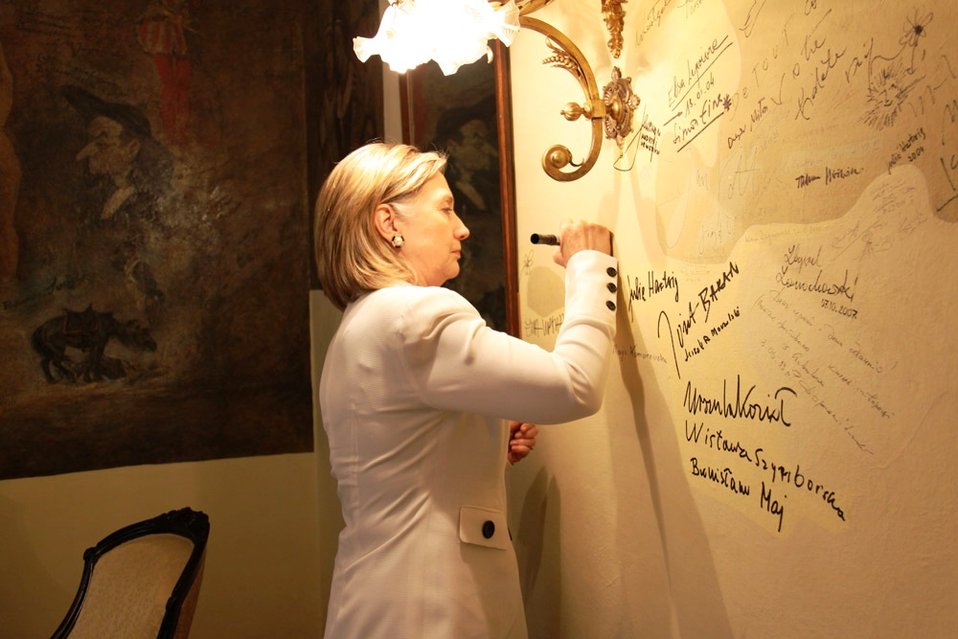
Secretary Clinton Signs the Wall of the Solski Room at the Slowacki Theater

U.S. Secretary of State Hillary Rodham Clinton signs the wall of the Solski Room, an old theater tradition, at the Slowacki Theater in Krakow, Poland, on July 3, 2010.